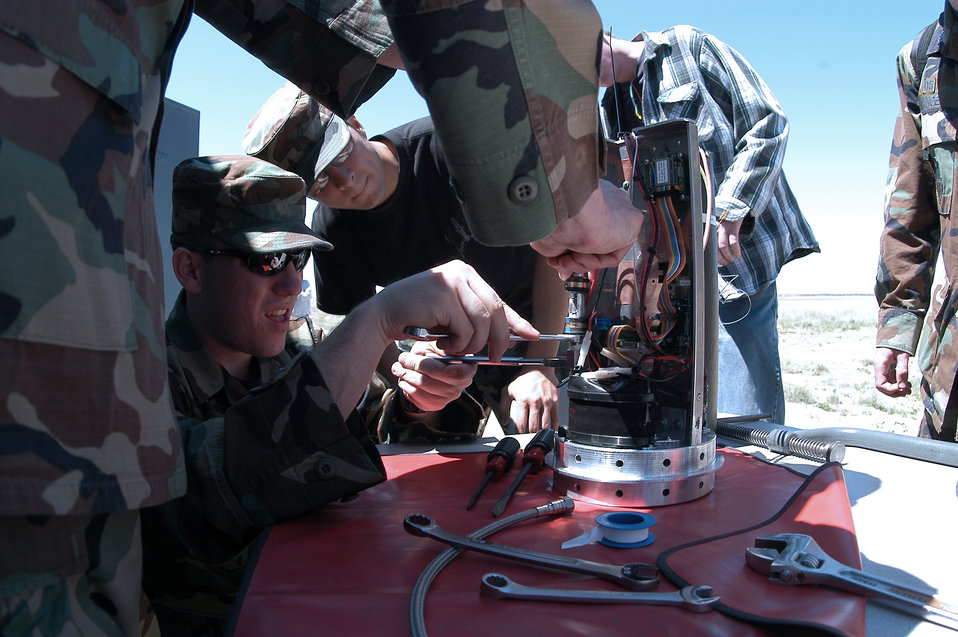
Rocket-powered final exam launches

PINON CANYON MANUEVER RANGE, Colo. -- Cadet 1st Class Eric Ray tightens a connection on the FalconLaunch rocket's avionics section, before assembly April 30. During the program, cadets design, manage, build and launch a rocket as part of the Air Force Academy's Department of Astronautics course. The program progresses each academic year, with the eventual goal of creating a rocket which can deliver a 5-pound scientific or experimental payload to an altitude of about 60 miles.